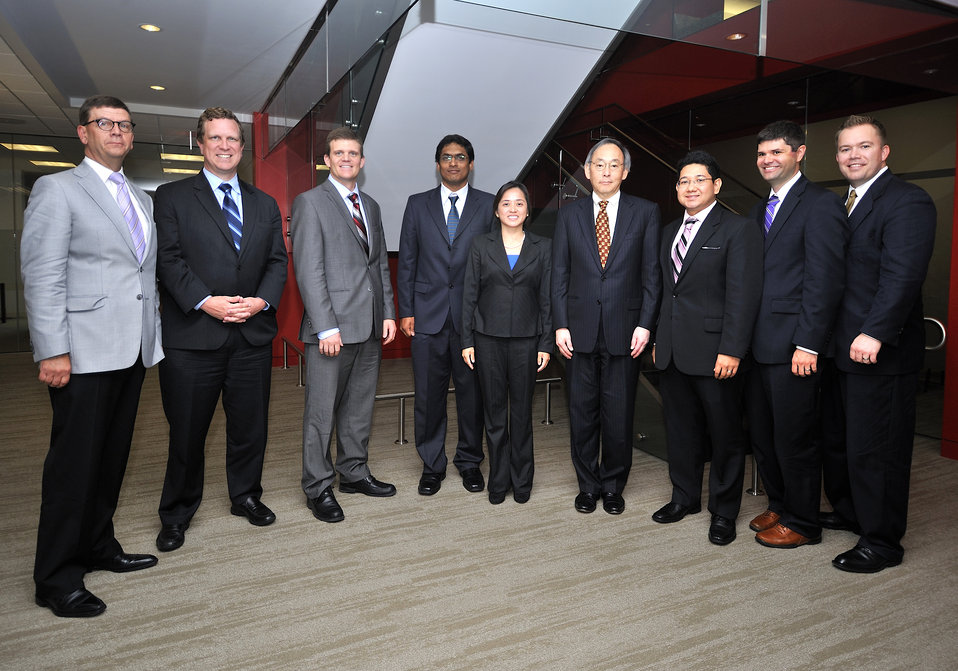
National Clean Energy Business Plan Competition

The National Clean Energy Business Plan Competition inspired nearly 300 university teams across the country to create new businesses to commercialize promising energy technologies developed at U.S. universities and the National Laboratories.